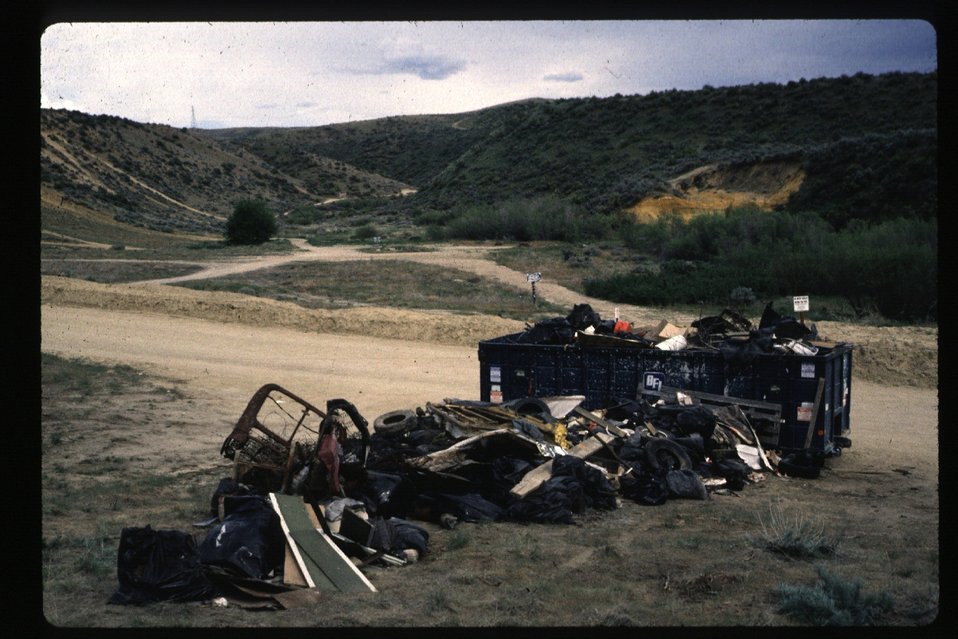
Rangelands Tending the Boise Foothills Boise Front Four Rivers Field Office LSRD Lower Snake River District